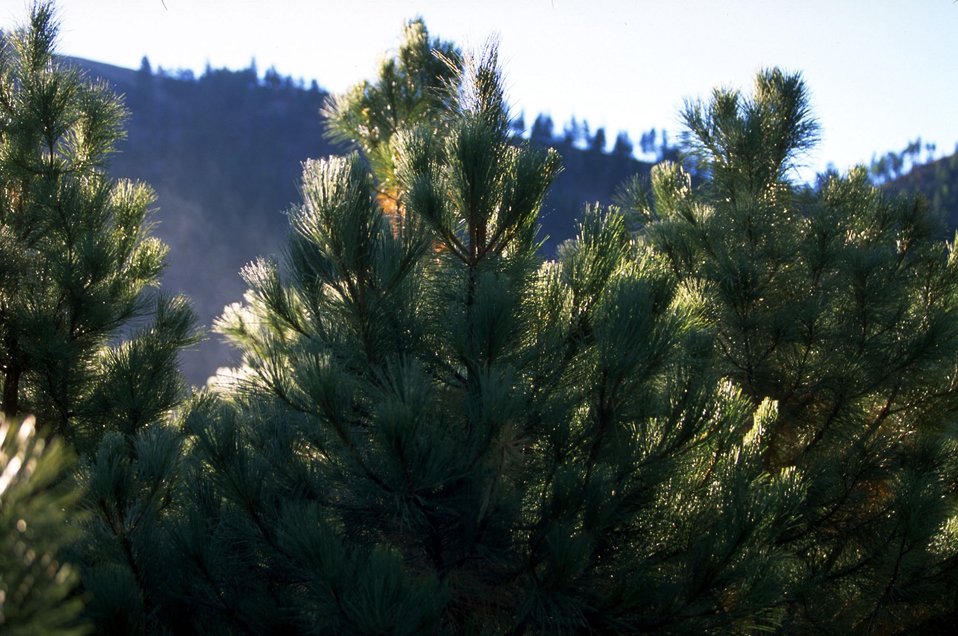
Ponderosa pine close up of needles